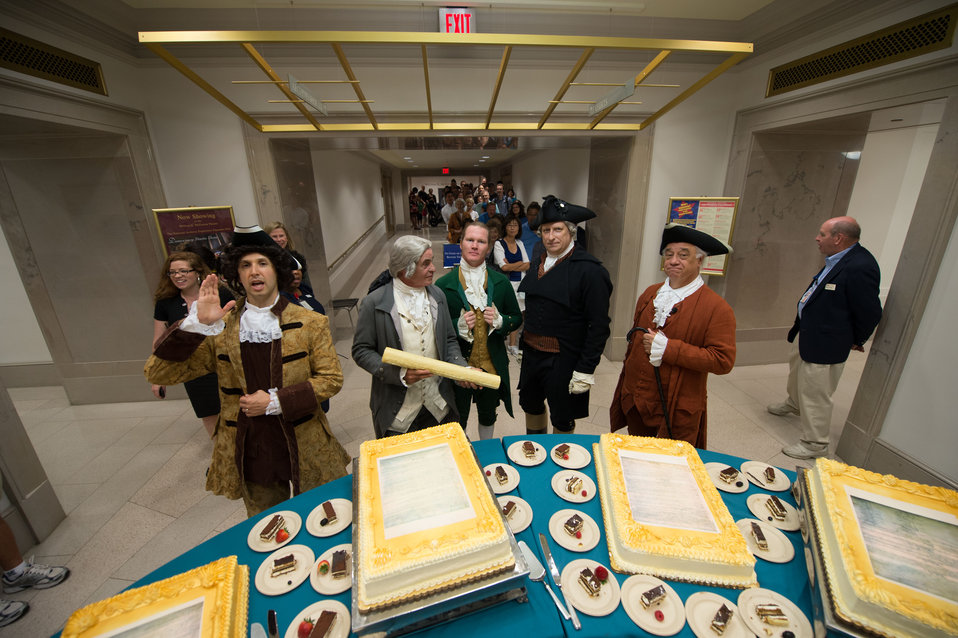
Reporting for duty

The Founding Fathers get ready to serve cake